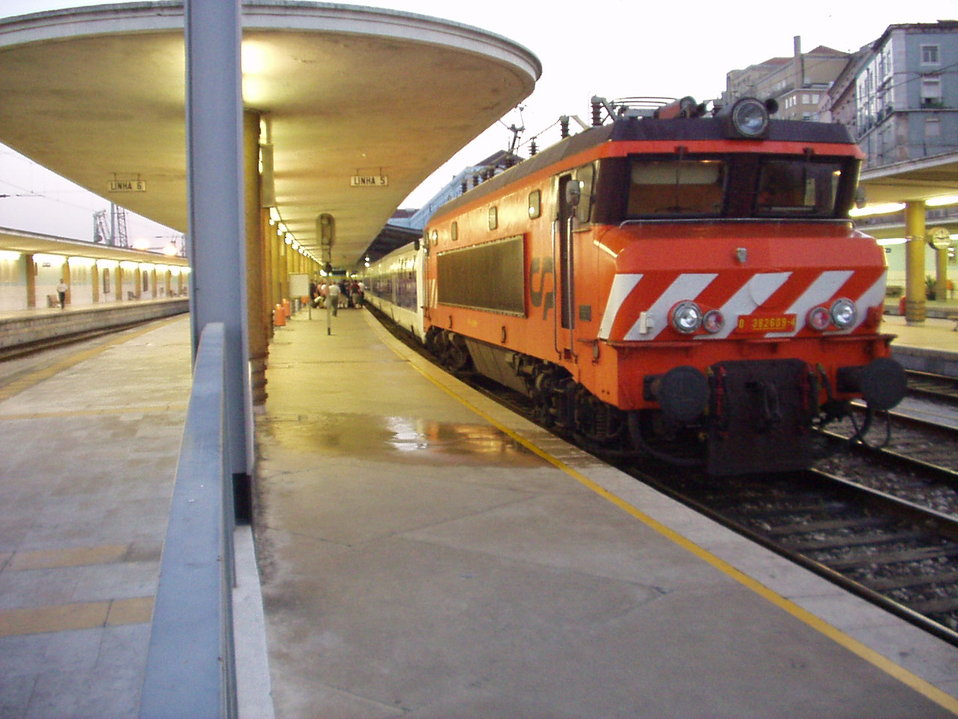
0-382609-4 at Santa Apolónia in Lisbon with Talgo Trenhotel Lisbon—Madrid Русский: Поезд Лиссабон—Мадрид на лиссабонском вокзале Санта-Аполония